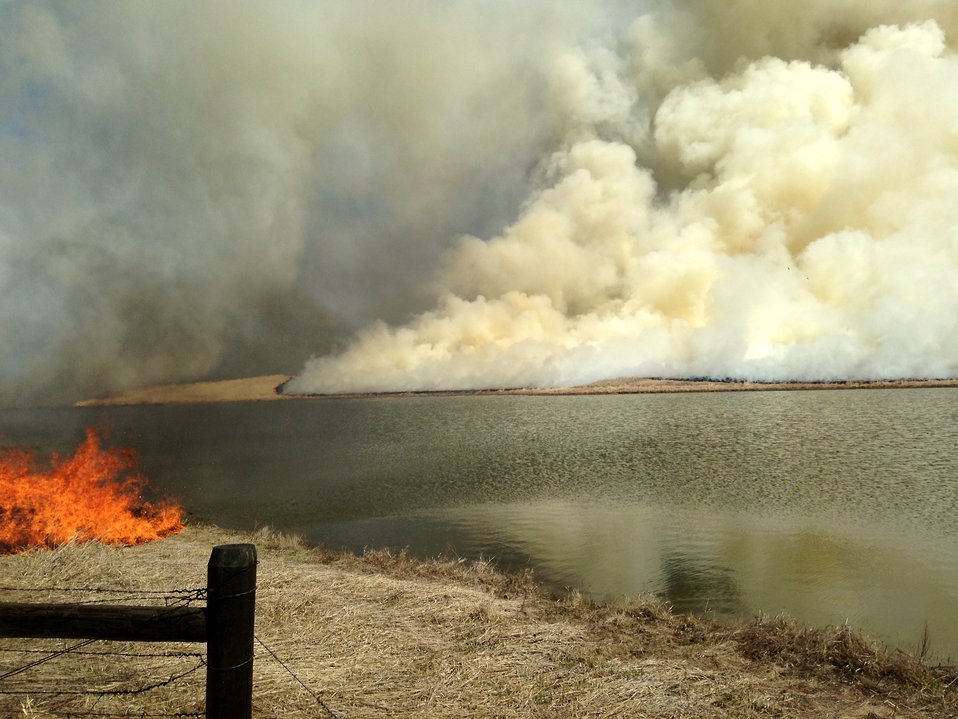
Where there's Smoke, there's Fire

On the Dewald Waterfowl Production Area in South Dakota, fire is used as a tool to help stimulate native plant growth and improve habitat condition. These prairies adapted to the frequent wildfires before humans began suppressing them, and rely on them to stay healthy. This prescribed burn was carefully tended by a crew of 10 qualified wildland firefighters and their engines and UTVs.